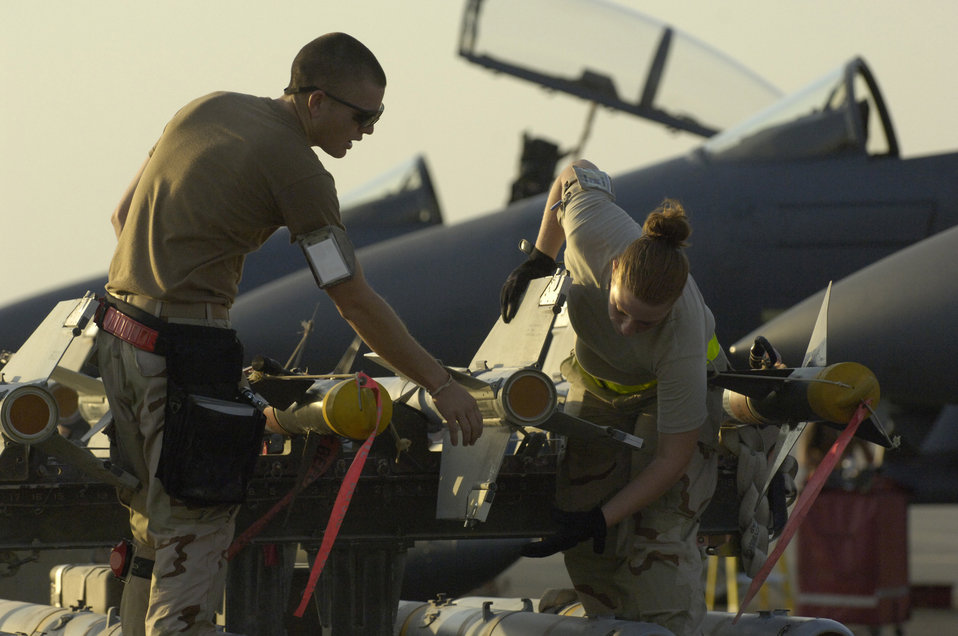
Strike Eagles have landed

Staff Sgt. Kevin Harvey and Airman 1st Class Amanda Hicks prepare to load M-120 and AIM-9 rockets on one of six F-15E Strike Eagles that landed at a forward-deployed base in Southwest Asia Sept. 21. Sergeant Harvey and Airman Hicks are weapons loaders assigned to the 494th Aircraft Maintenance Unit. The aircraft are from Royal Air Force Lakenheath, England.